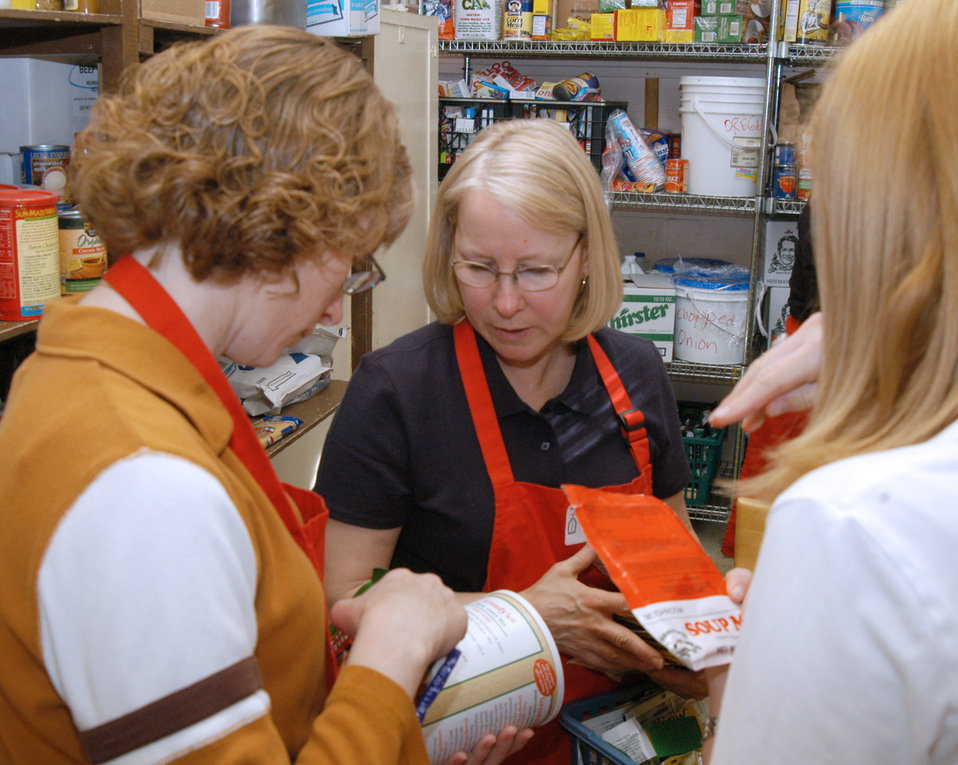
Volunteers give to community at Marian House

COLORADO SPRINGS, Colo. -- (From left) Tech. Sgt. Traci Hughes and Germaine Hill search through the pantry for gravy thickeners at the Marian House. The house provides food and other aid to people who cannot afford a warm meal. Sergeant Hughes is assigned to the 50th Contracting Squadron, and Ms. Hill is assigned to the Space Warfare Center, both at nearby Schriever Air Force Base.